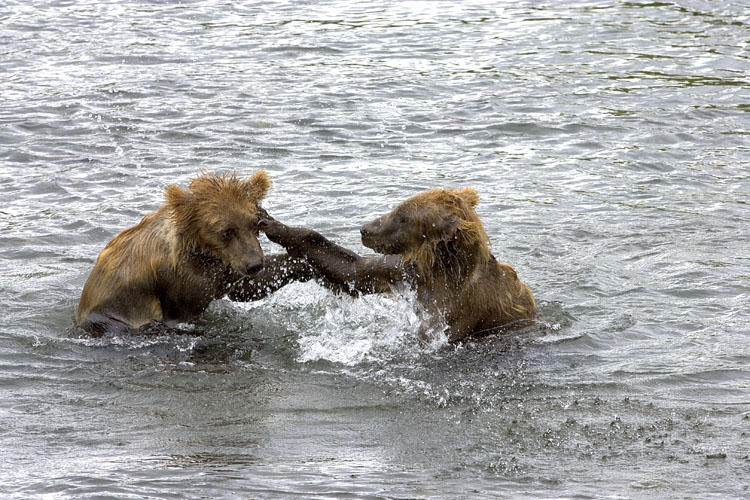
Kodiak Brown Bears

Playful Kodiak Bears